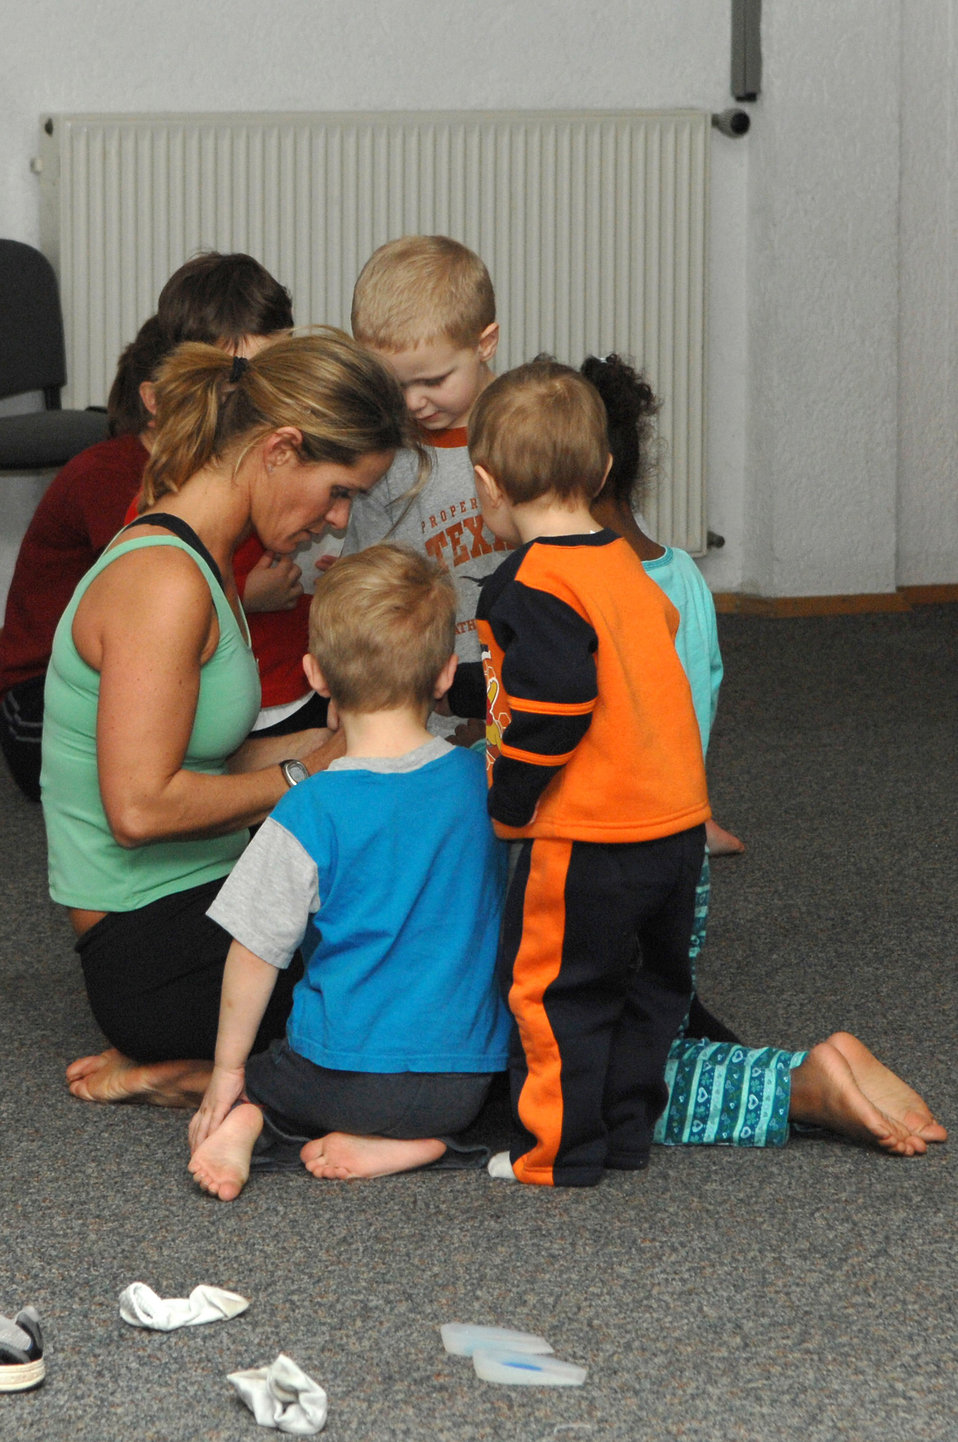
Children, parents get fit together

Renee Champagne, (left), hands out stickers to the children at the end of her Mommy and Me Yoga and Fitness class, Jan.18 at the Vogelweh Community Center. Ms. Champagne is the instructor for the class.